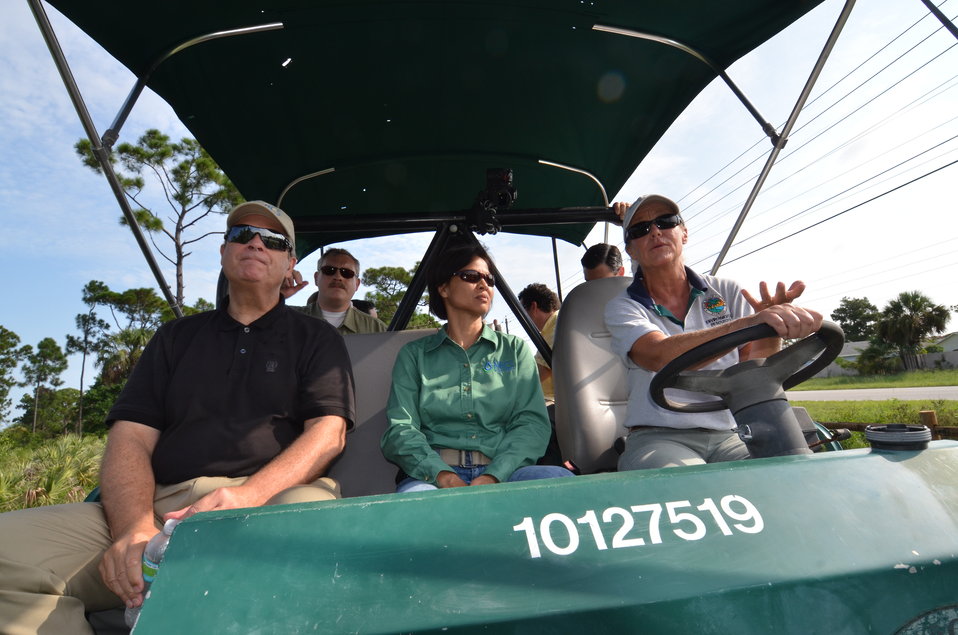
Agriculture Secretary Tom Vilsack rides along with USDA, National Resources Conservation Service Nga Watts and Palm Beach County Board of County Commissioners, Department of Environmental Resource Management, Natural Resources Stewardship Environmental Program Supervisor Brenda Hovde (driving) to see the Winding Waters Natural Area.